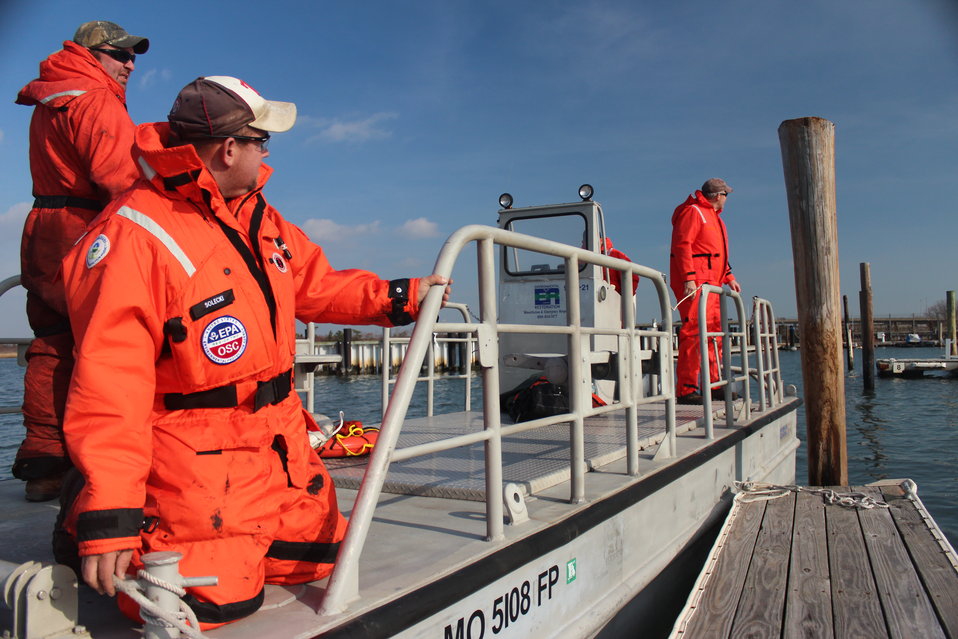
December 3, 2012 - Boat crews depart for shoreline sweep, Lido Beach, Long Island

During the first week of December, EPA boat crews covered areas along Jamaica Bay, Lido Beach, Long Beach, Harbor Isle and Middle Bay looking for ‘Household Hazardous Waste’ containers, tanks, and drums.